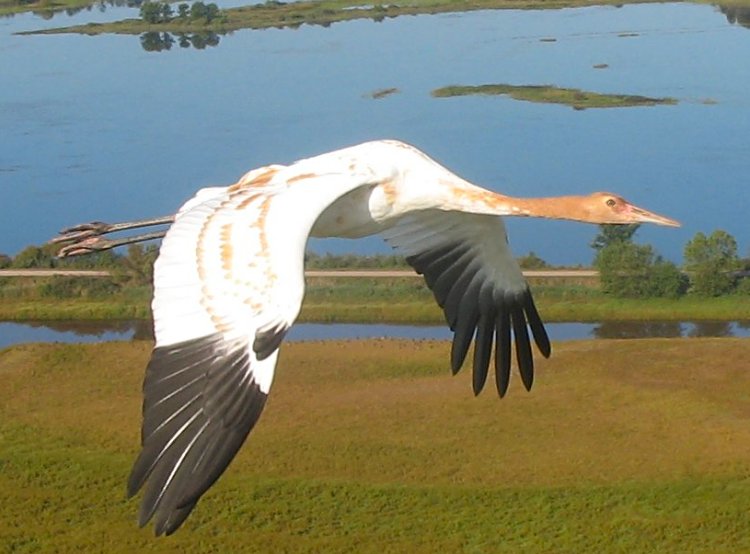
young whooping crane in flight

Necedah National Wildlife Refuge